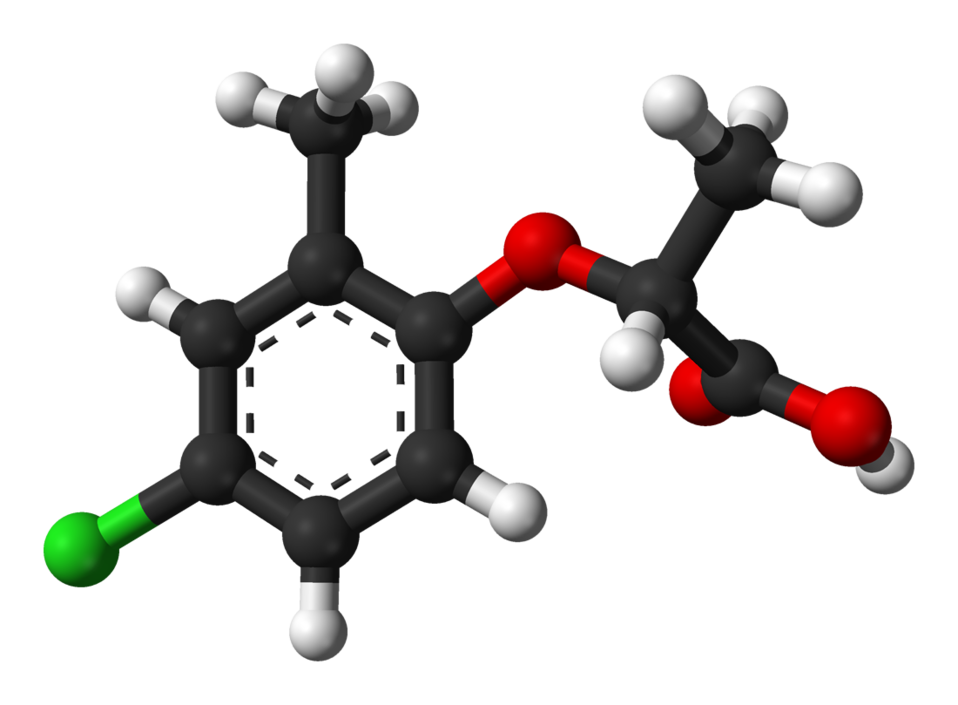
Ball-and-stick model of the (R)-( )-mecoprop molecule, as found in the crystalline state. X-ray crystallographic data from G. Smith, C. H. L. Kennard, A. H. White and P. G. Hodgson (April 1980). '( -)-2-(4-Chloro-2-methylphenoxy)propionic acid (mecoprop)'. Acta Cryst. B36 (4): 992-994. DOI:10.1107/S0567740880005134.. Model constructed in CrystalMaker 8.1. Image generated in Accelrys DS Visualizer.